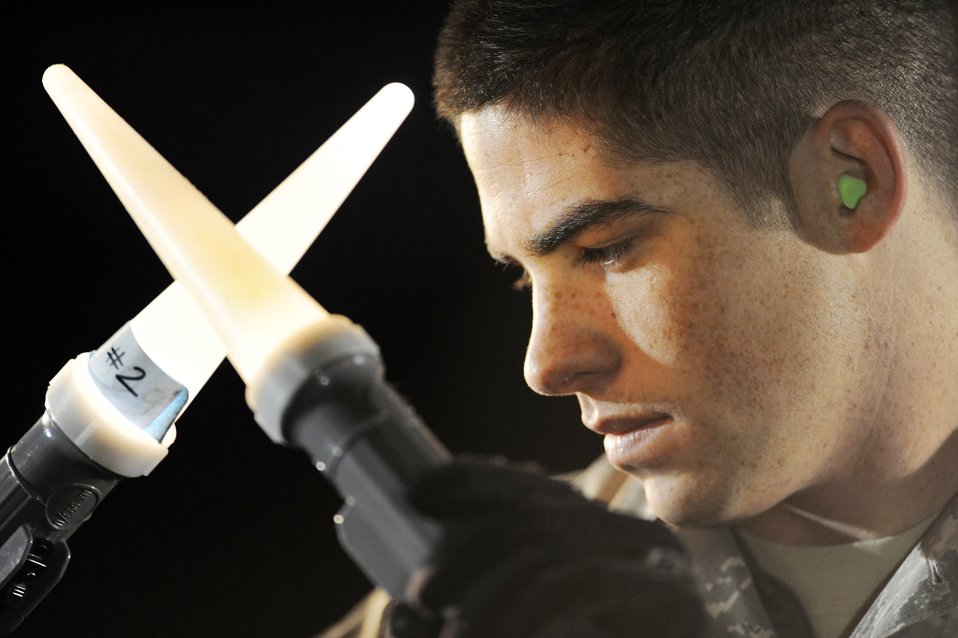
'X' marks the spot

Airman 1st Class Kaleb Salaza, with the 99th Logistics Readiness Squadron, signals to an aircraft on the Nellis Air Force Base, Nev., flightline during the wing operation readiness inspection Jan. 25, 2010.